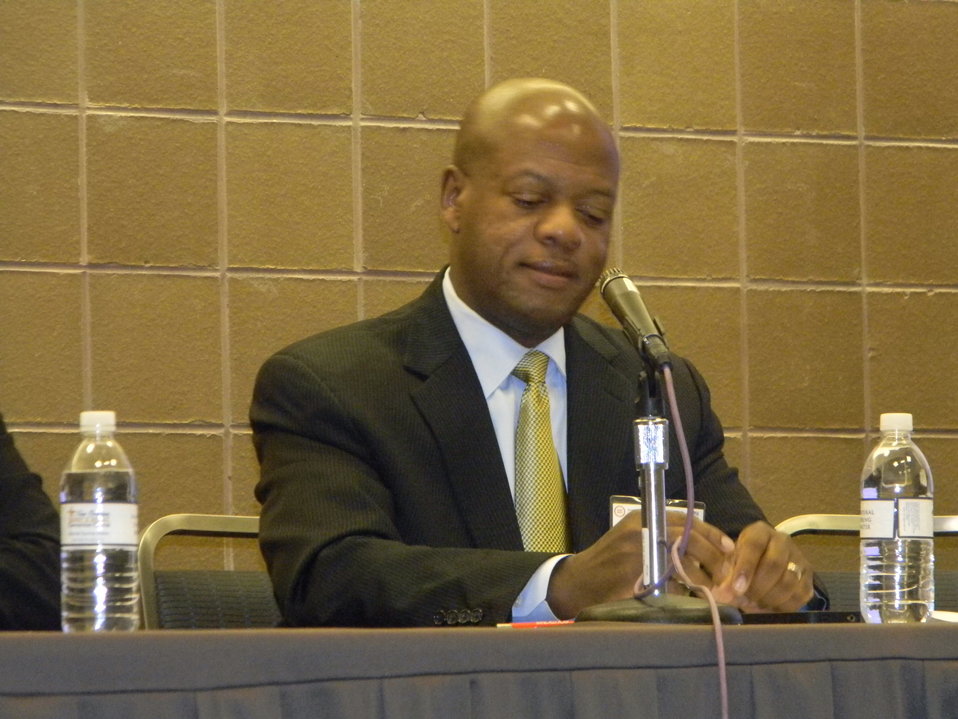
2012 National Urban League Conference

Panelist on the the Job Creation and Education: Programmatic Efforts to Increase Broadband Adoption in African American Communities panel.